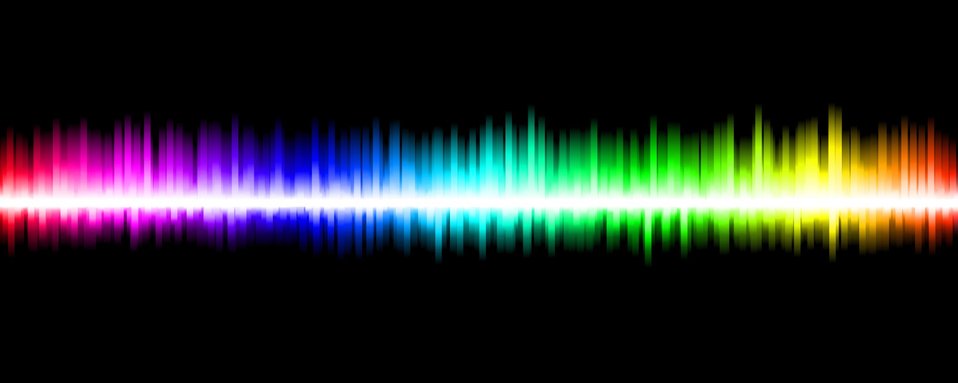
Rainbow light

Squared rainbow light, much like you'd see on audio systems or police sirens..